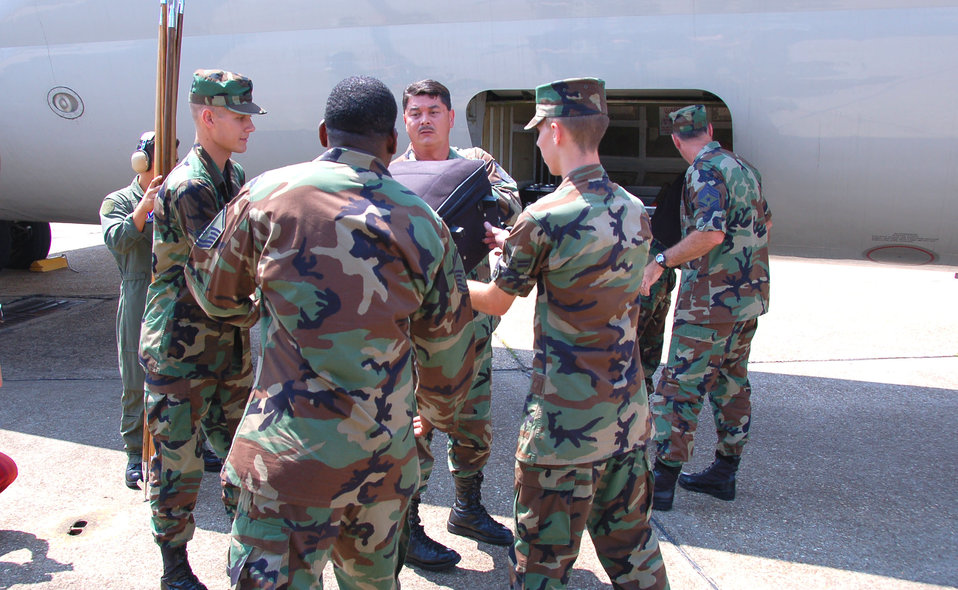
Senior Enlisted Leader Summit

Airmen from the First Term Airmen Center and other organizations at Maxwell Air Force Base, Ala., assist arriving senior enlisted leaders unload equipment and luggage July 21 for the 2007 Senior Enlisted Leader Summit. As a cost-saving measure, the Office of the CMSAF arranged for military air, a Navy C-9, to transport senior enlisted leaders from the National Capitol Region to the summit. Among a full schedule of events, the enlisted leaders are addressing current force issues, participating in field perspective feedbacks and commemorating 60 years of Air Force heritage. The summit ends July 27.